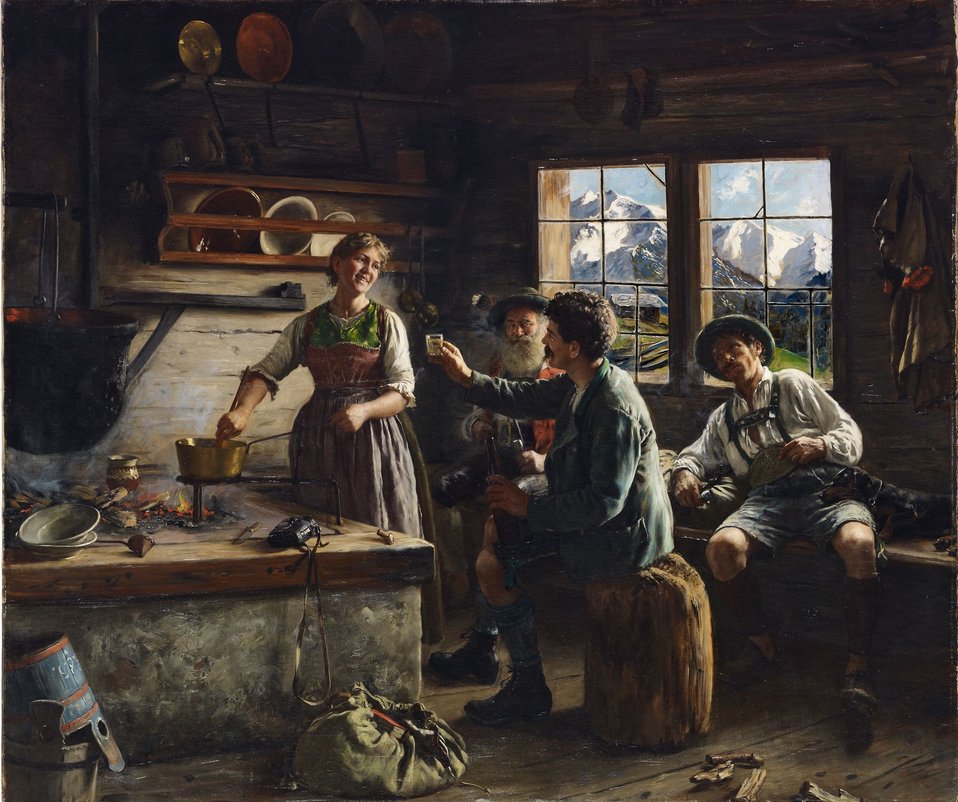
Emil Rau Auf der Alp